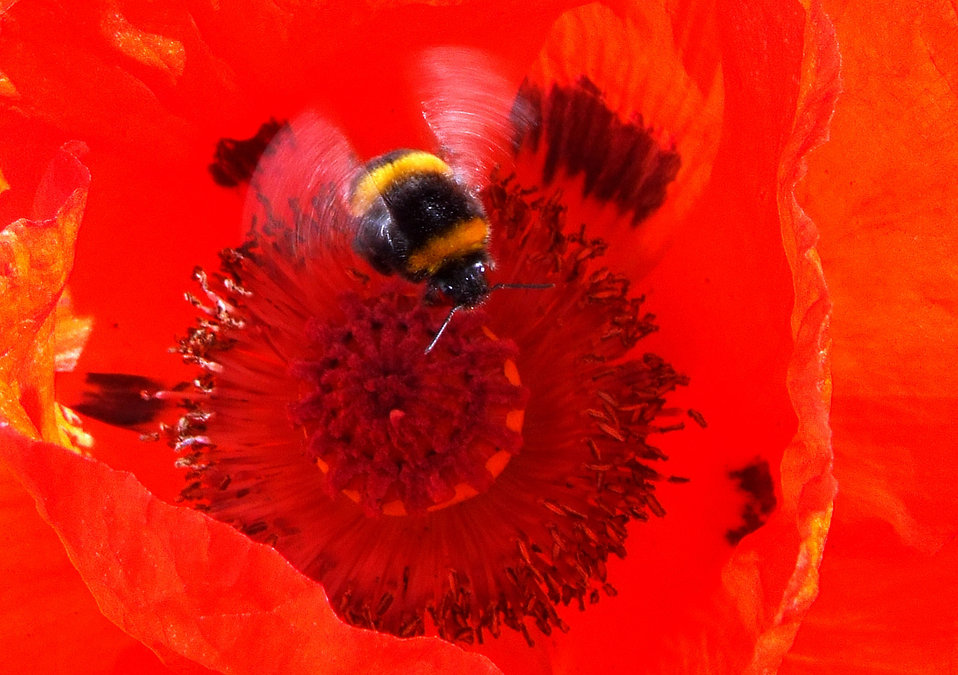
Flight of the bumblebee

Bumblebee flies of red poppies.